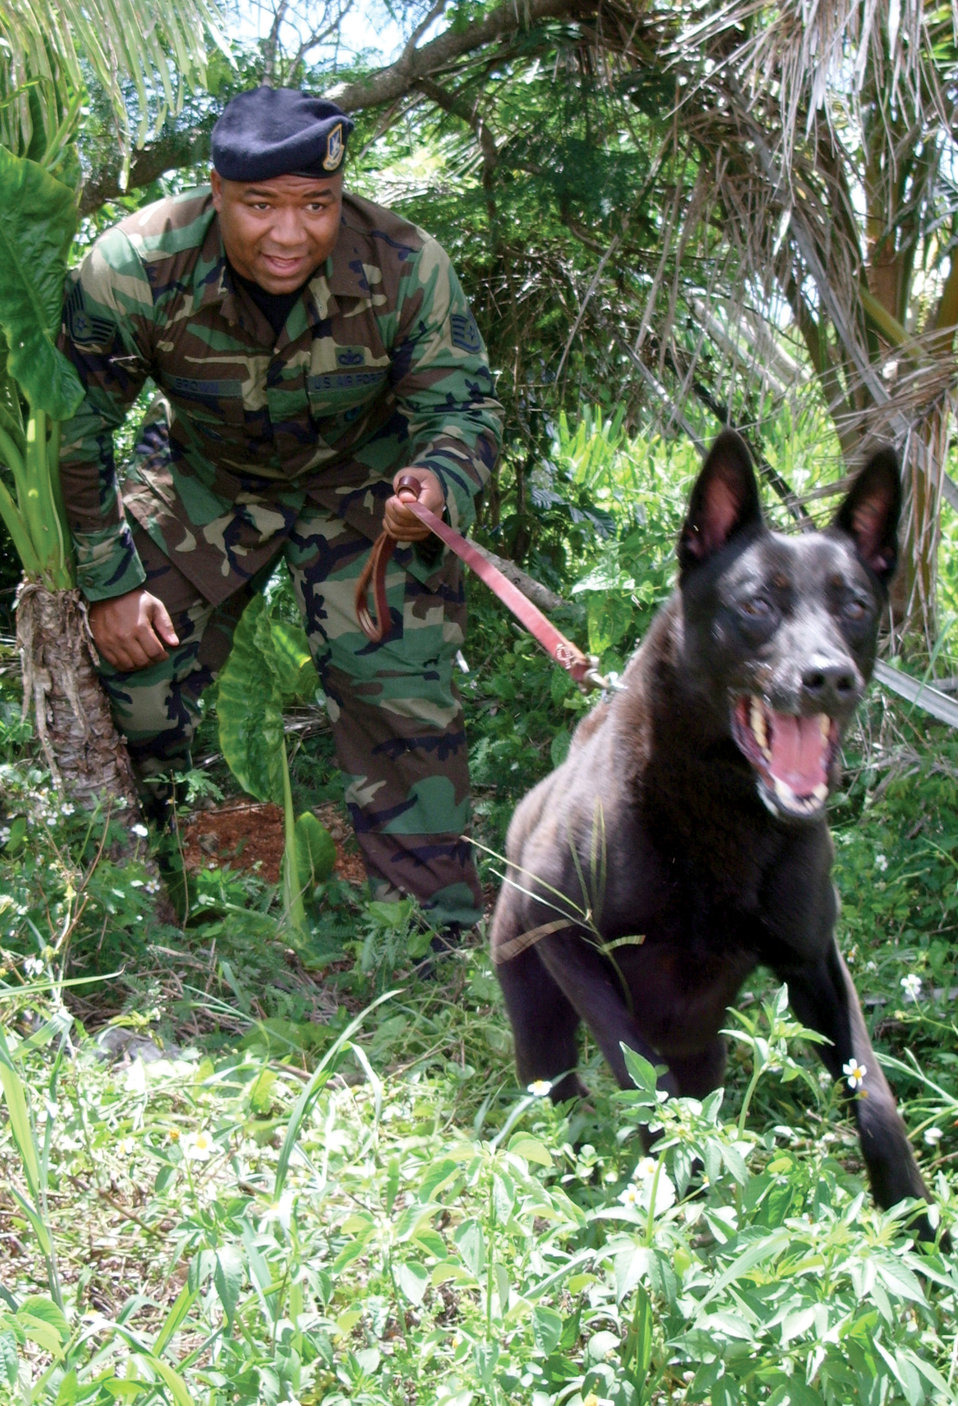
Jungle patrol

ANDERSEN AIR FORCE BASE, Guam -- Staff Sgt. William Brown III and his military working dog, Tarzan, are part of new patrol dog detection operations in and around Andersen. The team will spearhead patrol dog detection focusing specifically on outlying jungle spaces to detect and apprehend anyone attempting illegal entry.